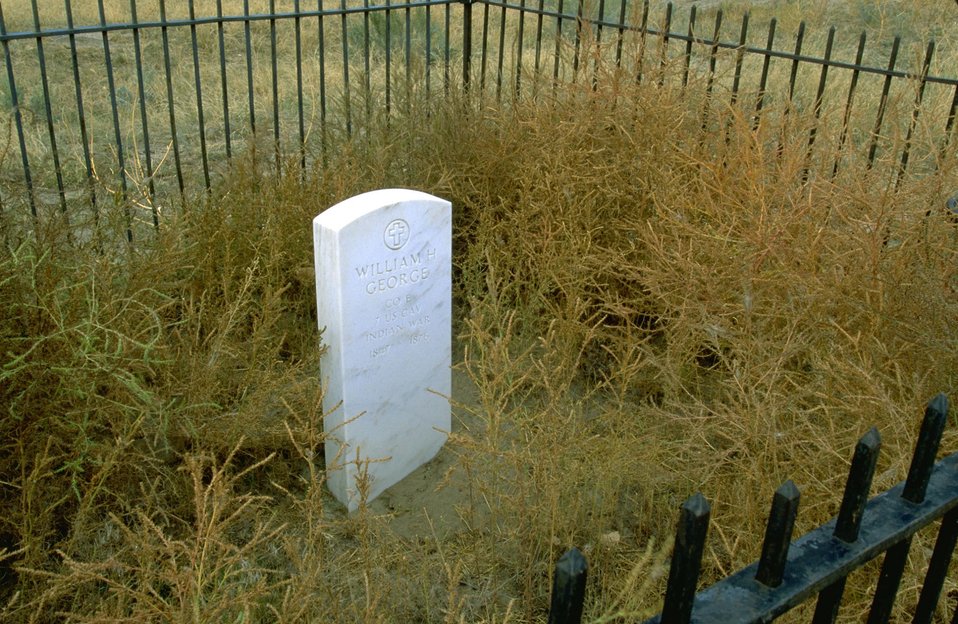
Headstone of William George of Custer's 7th Cavalry, Powder River Depot